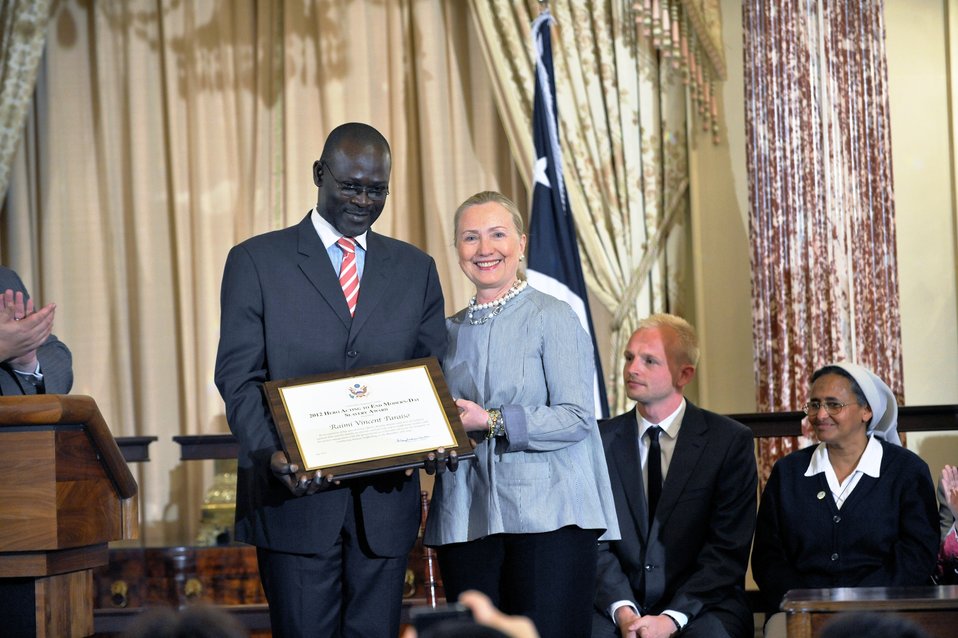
Secretary Clinton With TIP Hero Raimi Vincent Paraiso

U.S. Secretary of State Hillary Rodham Clinton honors Raimi Vincent Paraiso of the Republic of Congo, a 2012 Trafficking in Persons (TIP) Report Hero, at the U.S. Department of State in Washington, D.C., on June 19, 2012.